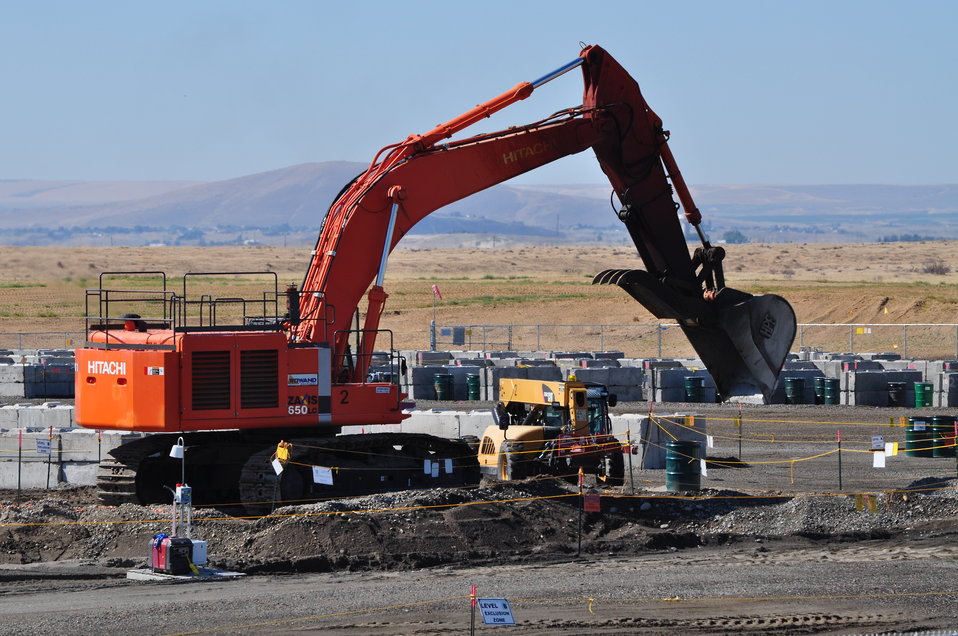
Hanford trench excavation

An excavator carefully digs into the trenches at the 618-10 Burial Ground, one of Hanford's most hazardous.